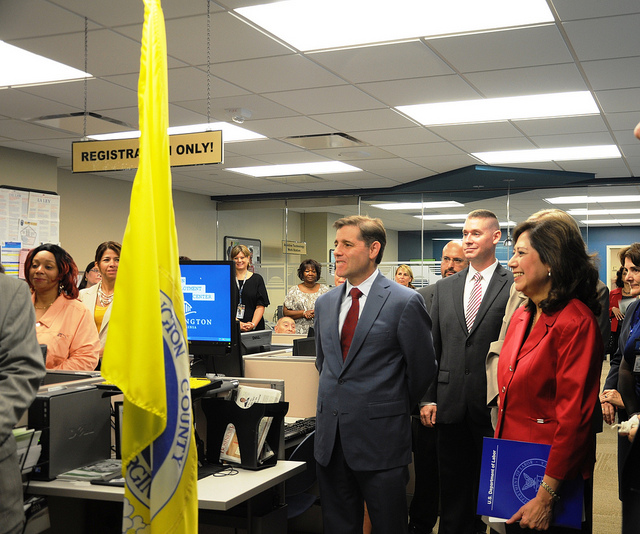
Connect to Compete 7.16.12

FCC Chairman Genachowski was joined by Secretary of Labor Solis to announce the partnership between the FCC and DOL to promote digital literacy for workers.